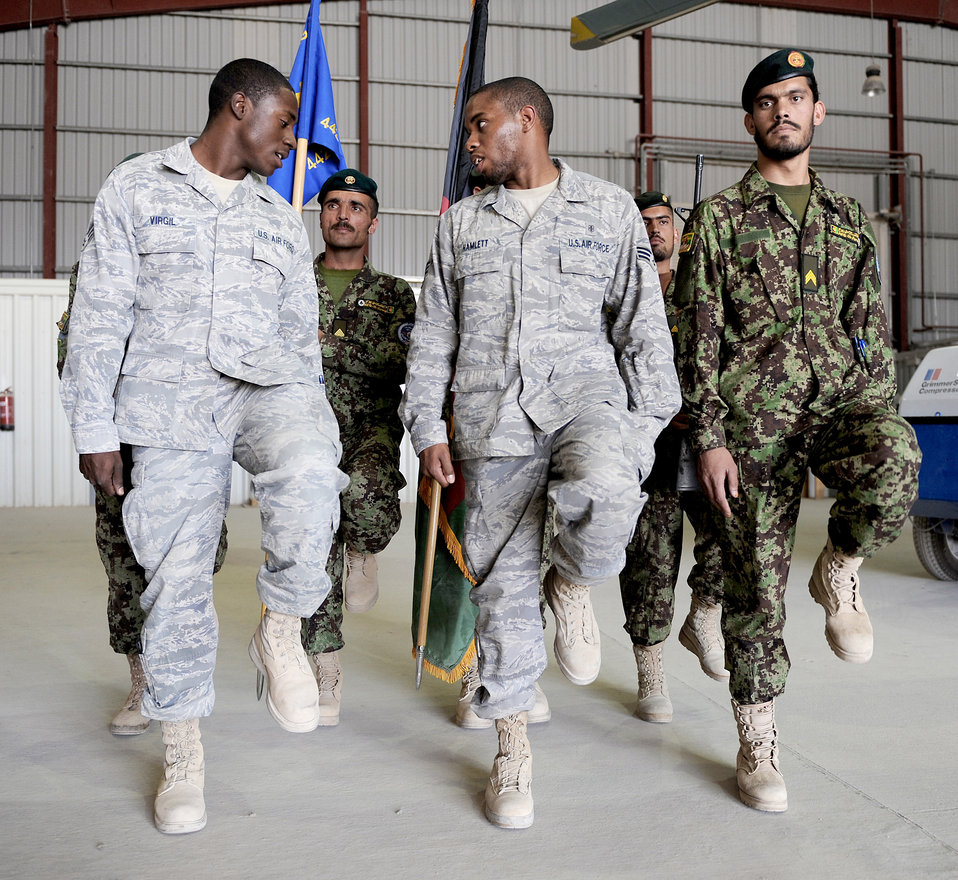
Afghan honor guard

Members of the 451st Air Expeditionary Wing Honor Guard train Afghan Airmen how to march for ceremonies Oct. 3, 2010, at Kandahar Airfield, Afghanistan. The 451st AEW Honor Guard worked with the Afghans to help them prepare their own Honor Guard for a ceremony marking the one year anniversary of the Kandahar Air Wing.